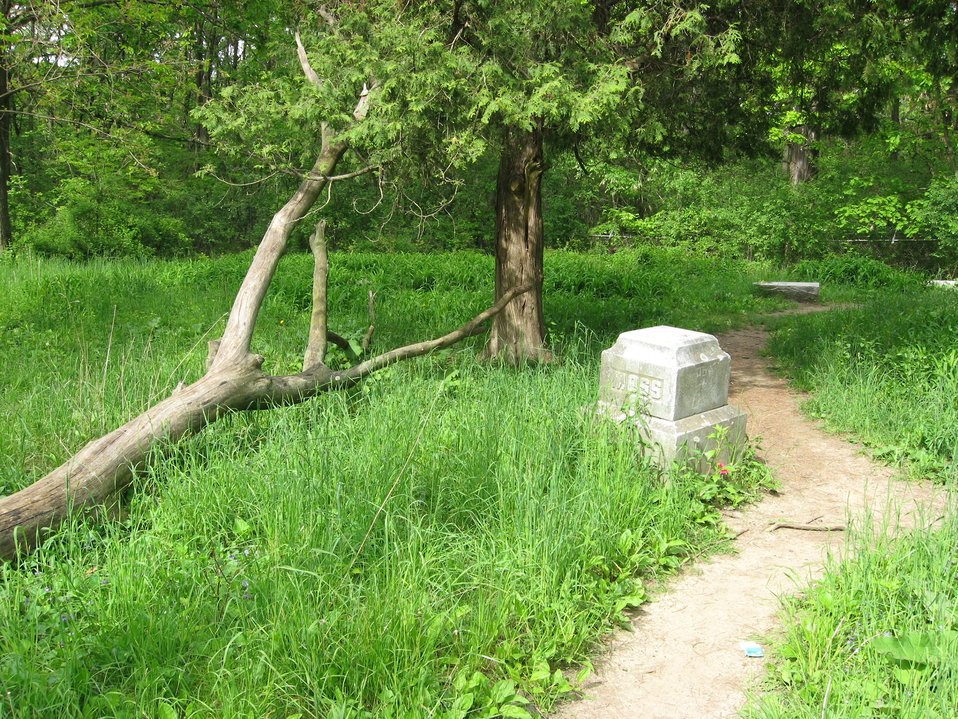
Bachelors Grove: fallen tree and nearby gravestones on path